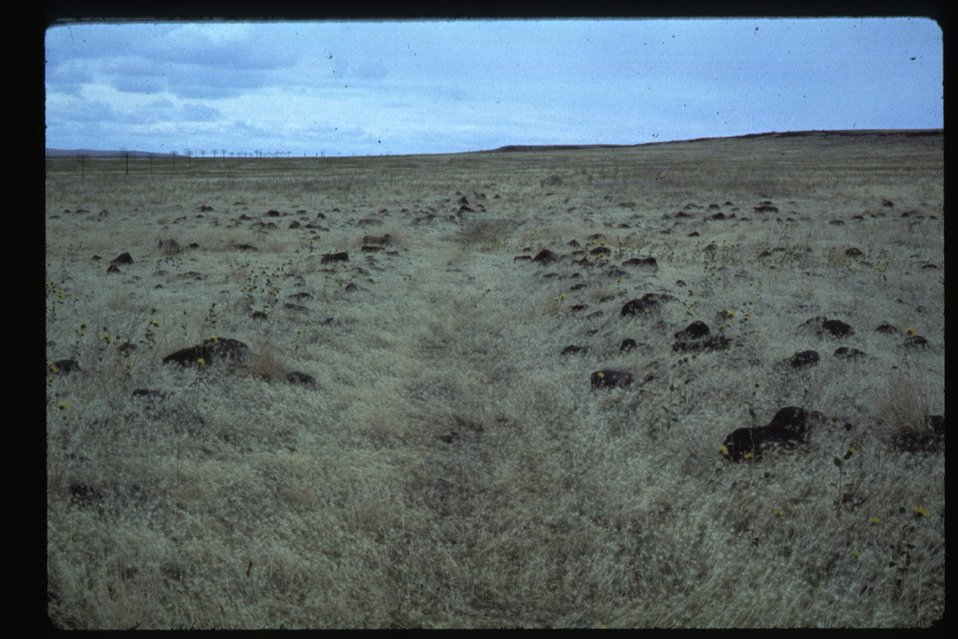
Oregon Trail LSRD Lower Snake River District